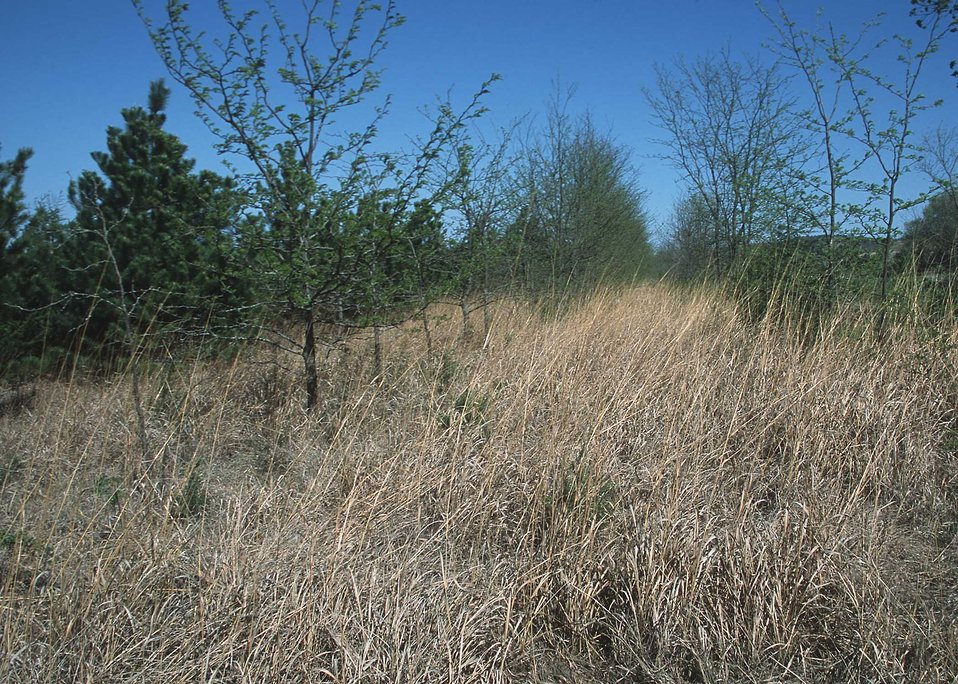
Twelve year old winddbreak installed under the CRP program. Kansas.